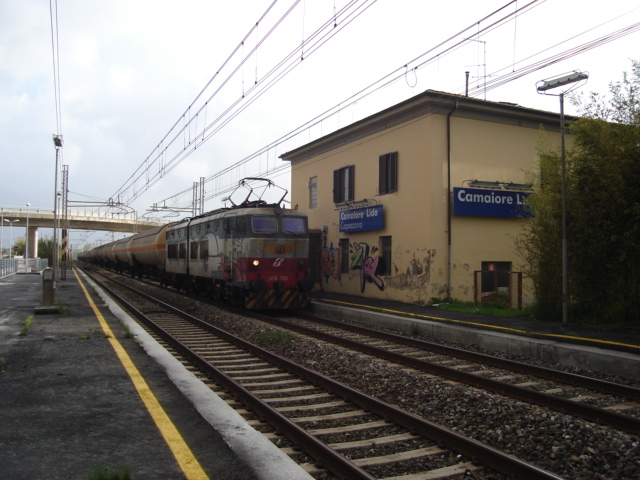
Italiano: Un treno merci in transito presso la stazione di Camaiore Lido